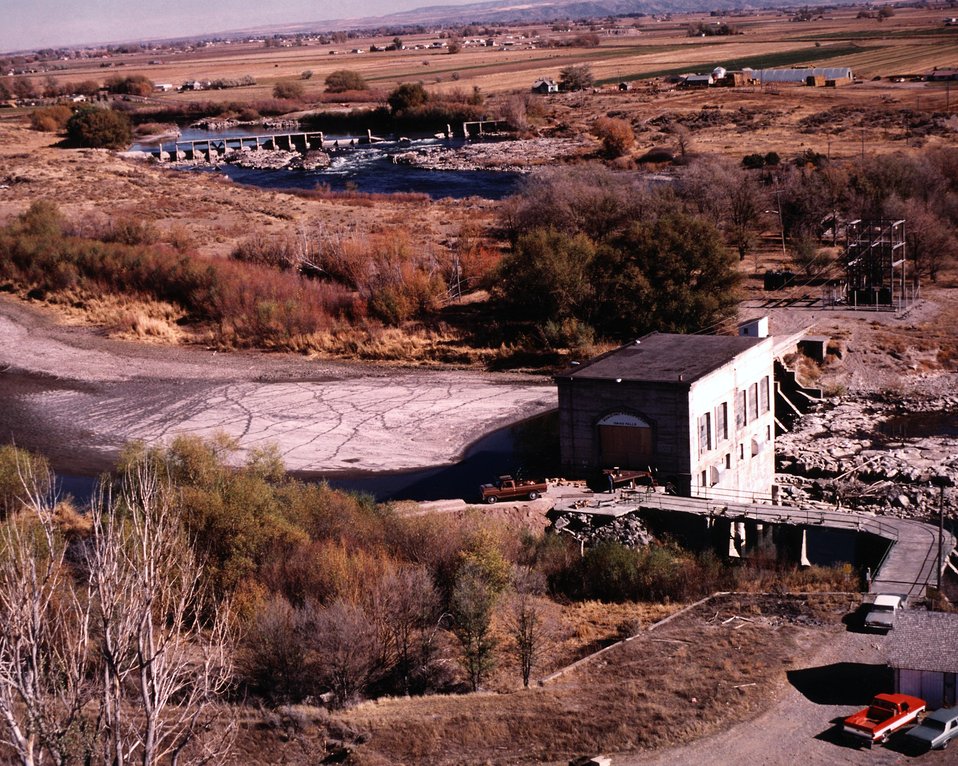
UPPER IDAHO FALLS POWER PLANT LOOKING UPRIVER (NORTH), POWERHOUSE AND DIVERSION DAM WILL BE REPLACED.

THE DEMONSTRATION PROJECT AT IDAHO FALLS CONSISTS OF REDEVELOPING THE CITY'S THREE EXISTING POWER PLANT SITES. THESE THREE SITES, ALONG THE SNAKE RIVER, ARE GOING TO CONTAIN LOW-HEAD HYDROELECTRIC PLANTS. A 7.2 MWE BULB TURBINE-GENERATOR WILL BE INSTALLED ON EACH SITE. ONE SITE WILL ALSO MAINTAIN TWO EXISTING 1.875 MWE UNITS AS STANDBY OR PEAK FLOW UNITS. PRIOR TO THIS PROJECT, BULB TURBINES HAD ONLY BEEN USED FOR HIGH POWER GENERATION. THIS PROJECT IS GOING TO DEMONSTRATE THAT BULB TURBINES CAN BE USED ECONOMICALLY FOR SMALL-SCALE, LOW-HEAD HYDROELECTRIC POWER GENERATION. THE PROJECT IS ALSO GOING TO DEMONSTRATE THAT THIS TECHNOLOGY CAN BE USED IMMEDIATELY, IT DOES NOT NEED EXTENSIVE RESEARCH AND DEVELOPMENT.